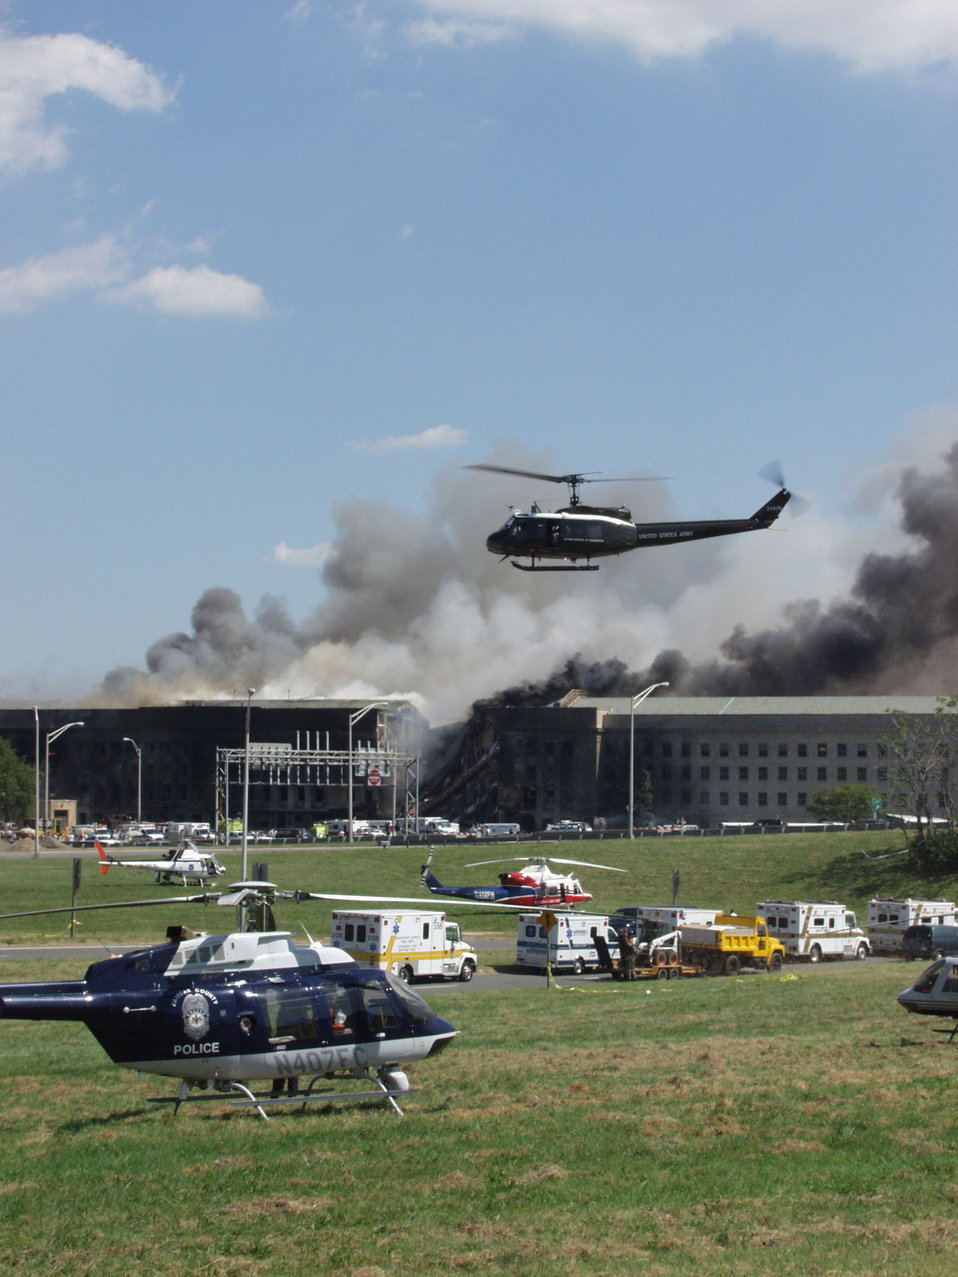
911 at Pentagon

WASHINGTON -- Police helicopters and emergency ambulance crews stand by to aid injured workers following the crash of a hijacked commercial airliner into a section of the Pentagon. Military and civilians helped transport injured people on litters to ambulances for treatment and transportation to hospitals.